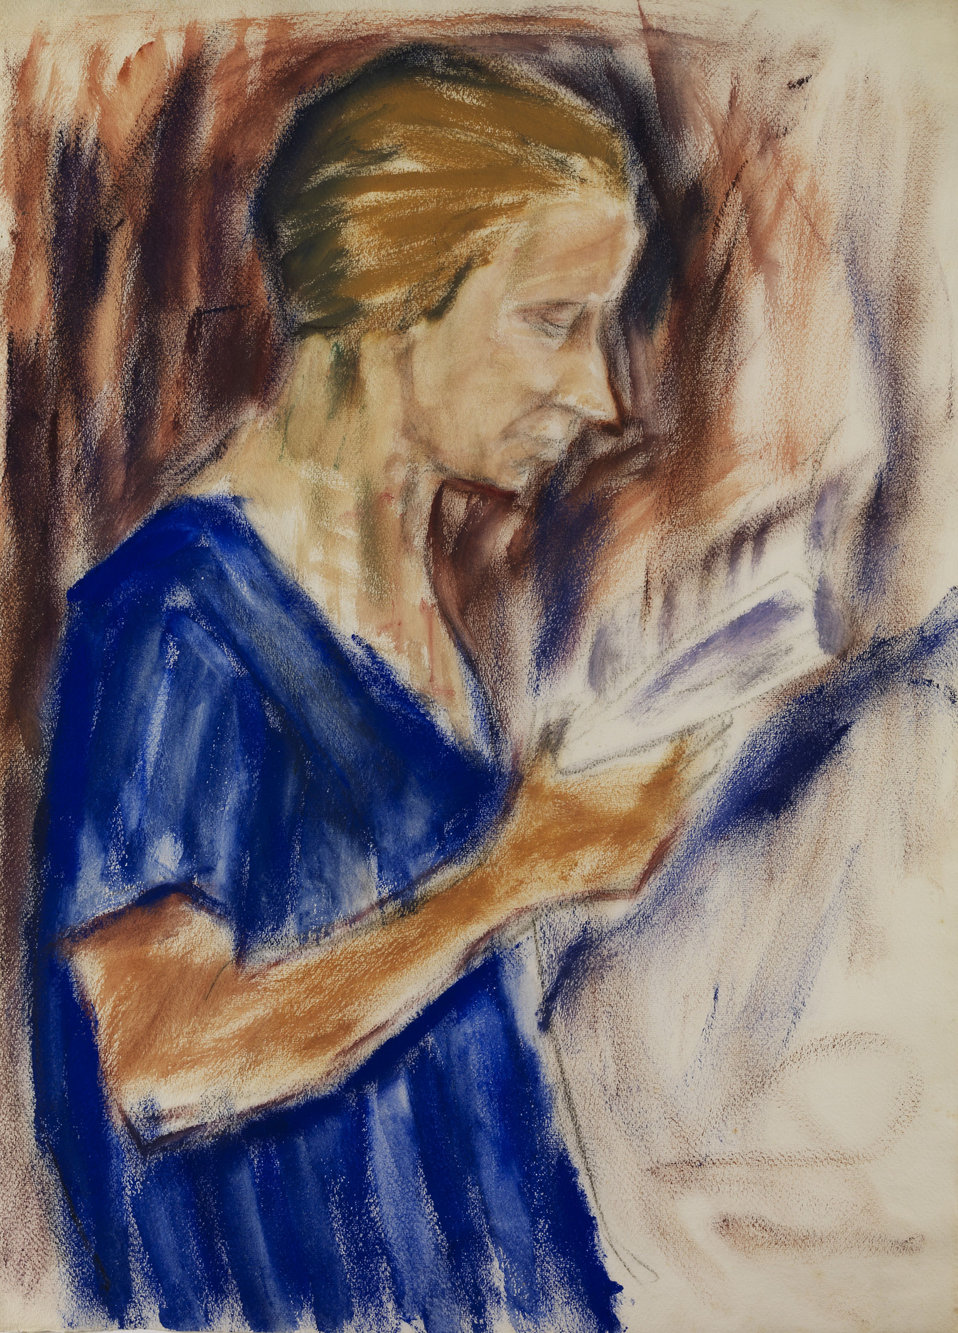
Portrait Helene Rohlfs. Tempera. 77 x 57 cm.